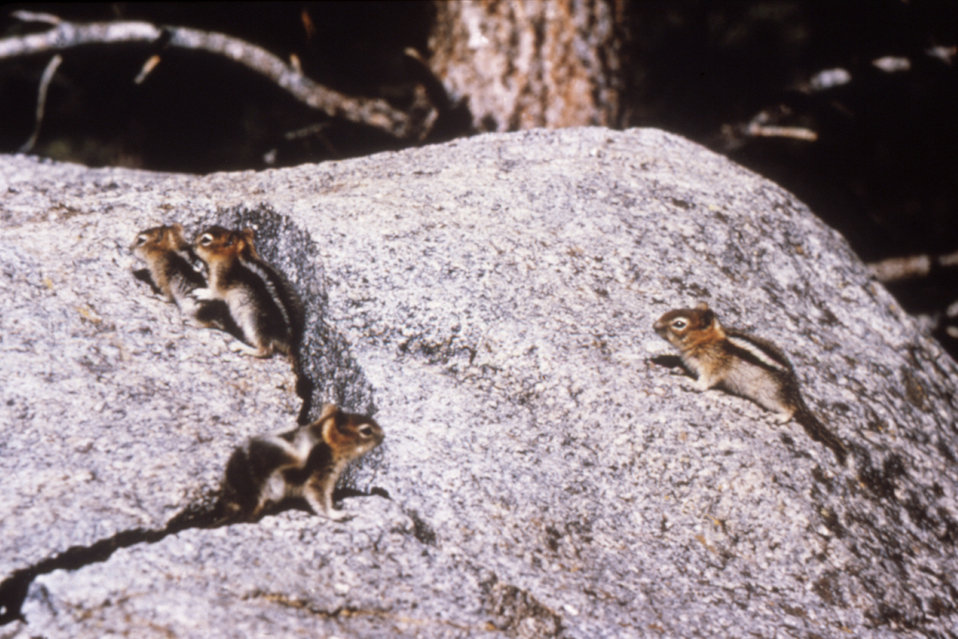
This image depicts several western chipmunks, Tamias cooperi, in their natural habitat. This specie is known to become infected with plague.